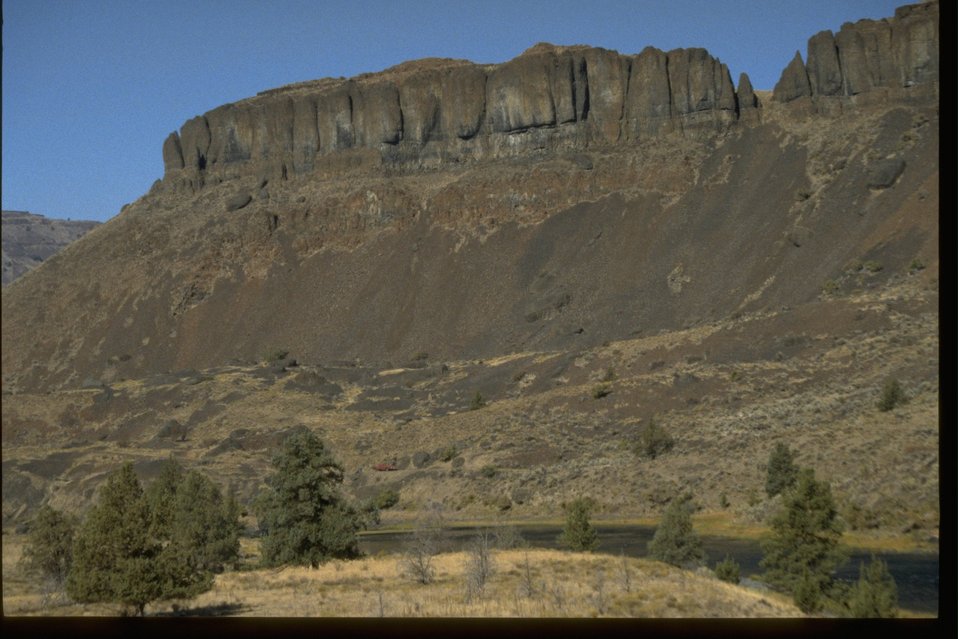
Juniper along John Day River with cliffs in the background.